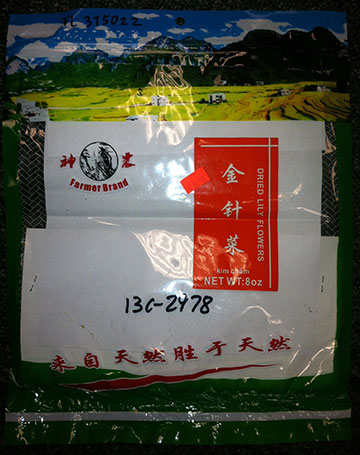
RECALLED - Farmer Brand Dried Lily Flowers

December 13, 2013 – Product Recall – Blooming Import Inc. Issues an Alert on Undeclared Sulfites in Farmer Brand Dried Lily Flowers.